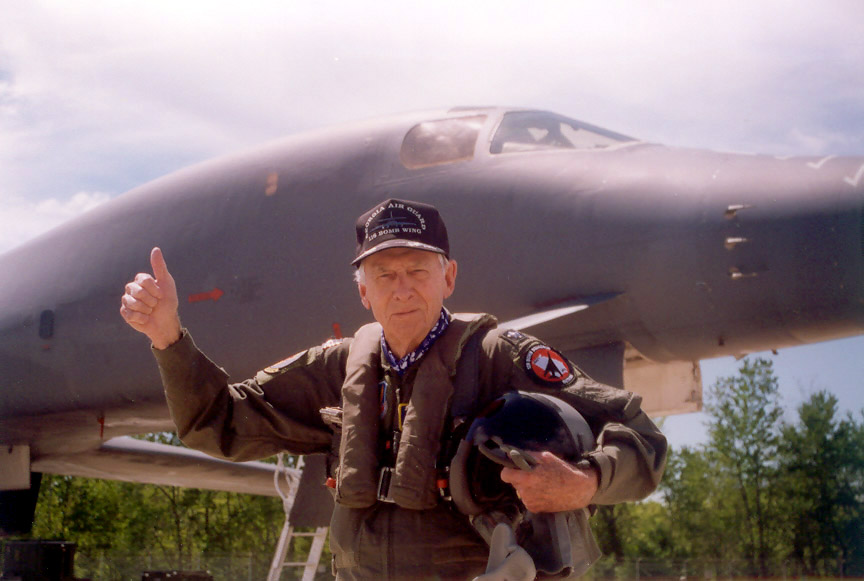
Brig. Gen. Robert L. Scott Jr. dies

Brig. Gen. Robert L. Scott Jr. after his B-1 flight in 1997.